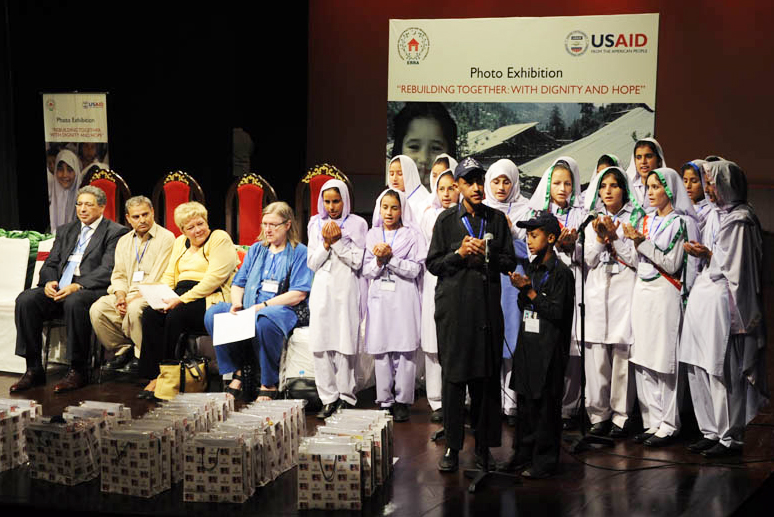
Photography and Drawing Exhibition on Pakistan 2005 Earthquake “Rebuilding Together: With Dignity and Hope”

Karen Freeman, USAID Deputy Director for Pakistan, Tarik Selim, Chief of Party, USAID Pakistan Earthquake Reconstruction and Rehabilitation Program, with the winner students of a photo contest organized by USAID. USAID organized a photo exhibition on Pakistan 2005 earthquake “Rebuilding Together: With Dignity and Hope” at Pakistan National Council of Arts (PNCA) in Islamabad.